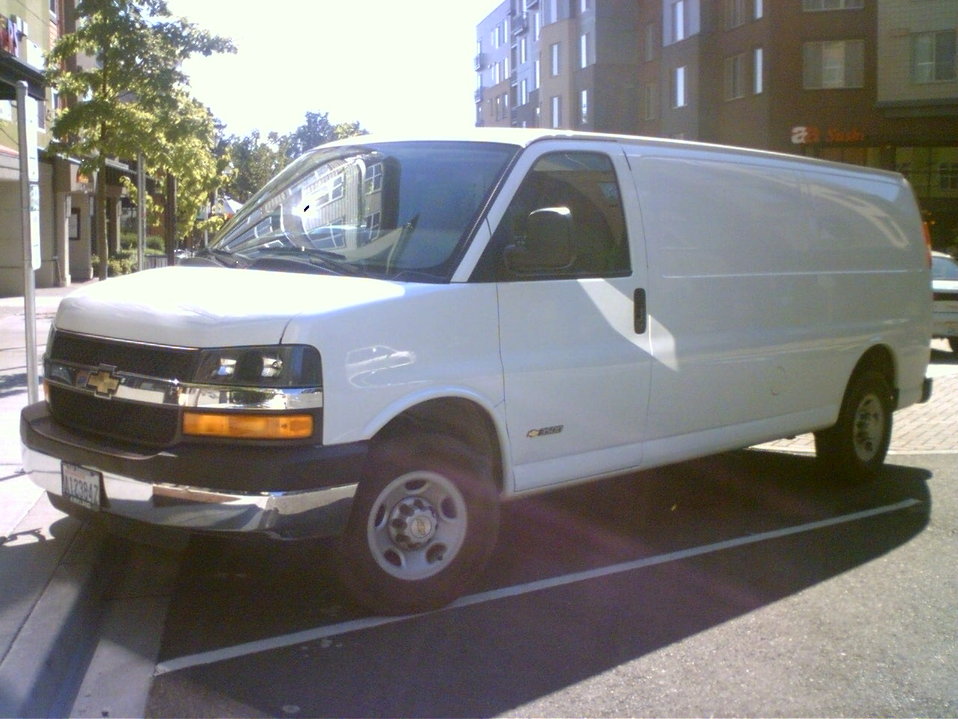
2006 Cheverolet Express cargo van.